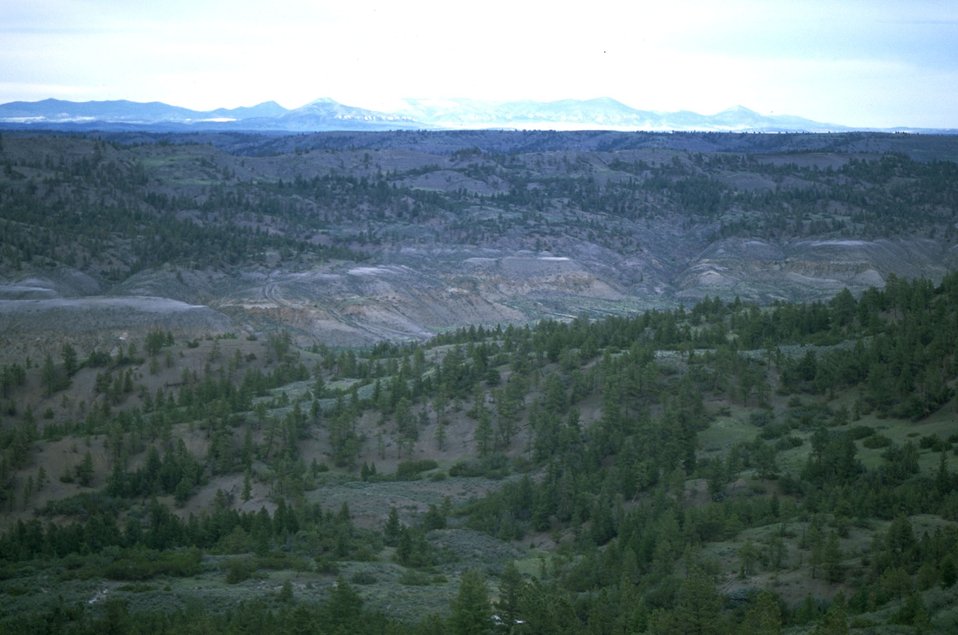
The Missouri Breaks